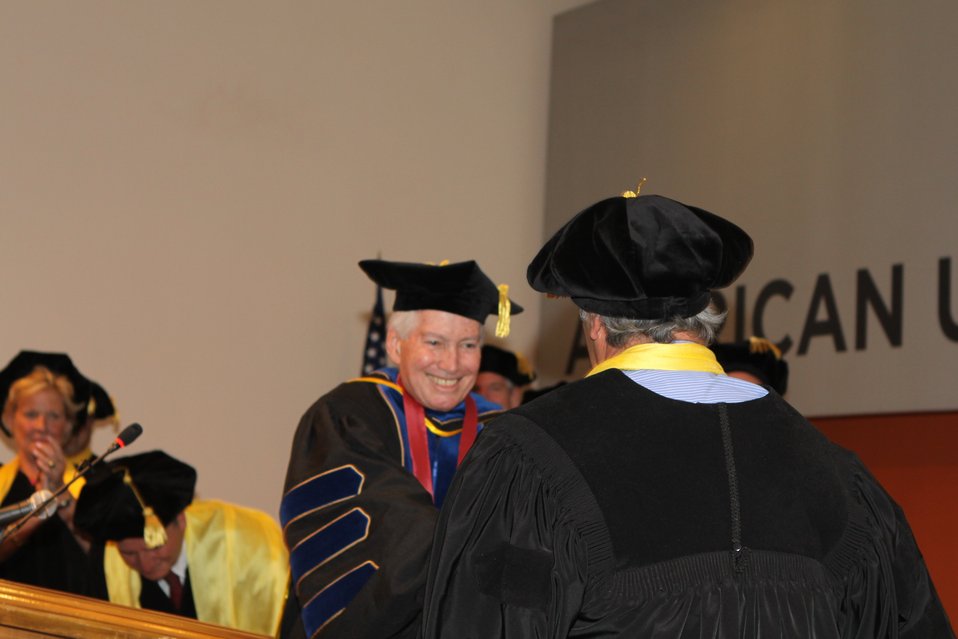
100526 AUAF Graduation 229